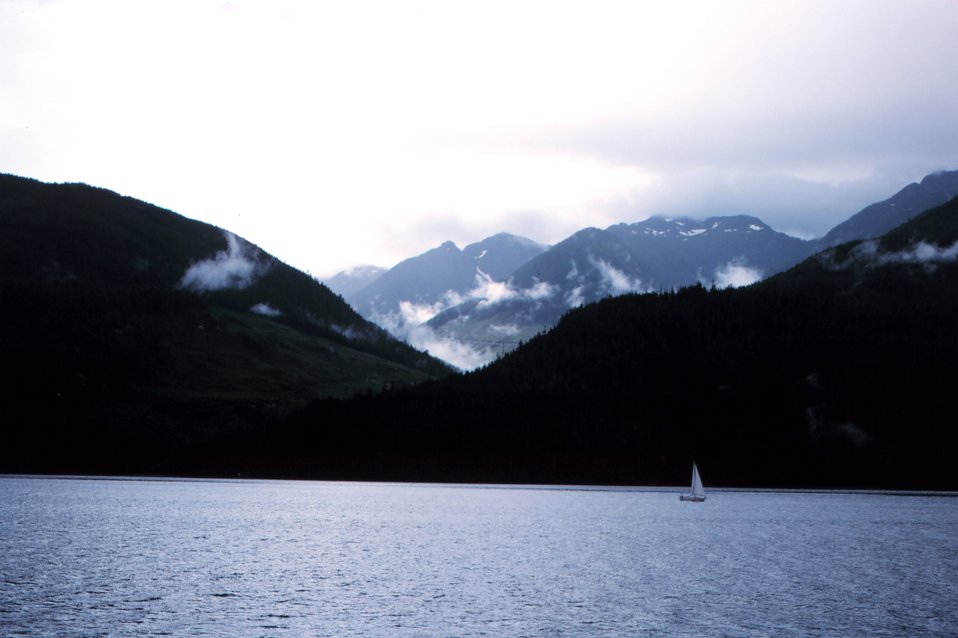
Somewhere along the Inside Passage.